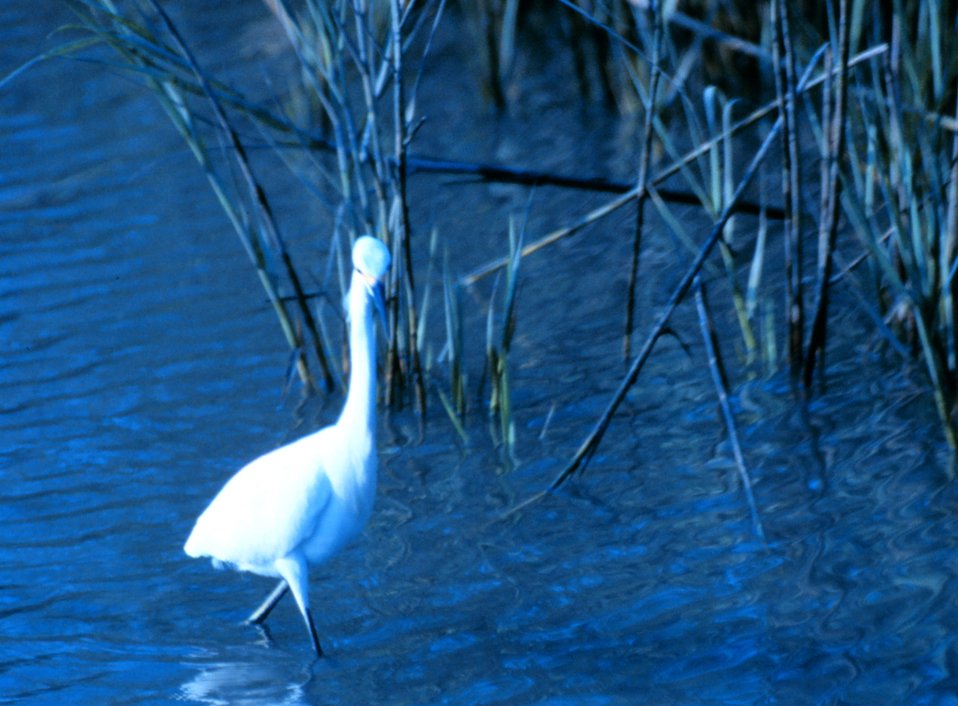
A great white egret in the tidal waters of Charleston harbor.